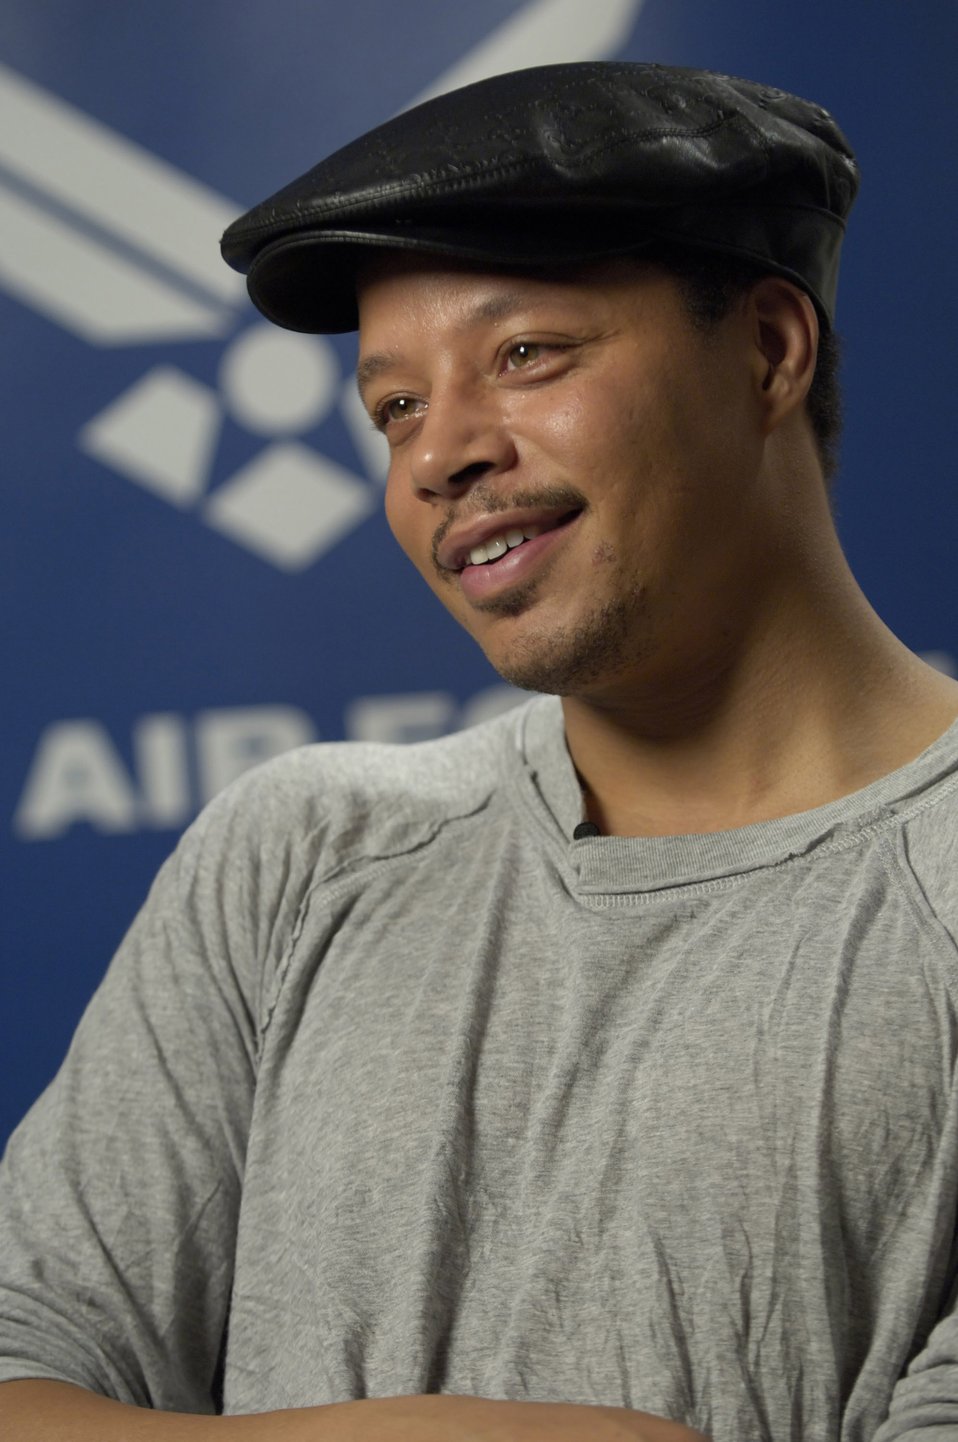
Terrence Howard interview

Oscar-nominated actor Terrence Howard describes his experiences and impressions of the Air Force during an interview May 27 in New York. Mr. Howard visited two Air Force bases and trained with Airmen while preparing for his role as Lt. Col. James Rhodes in the movie Iron Man.